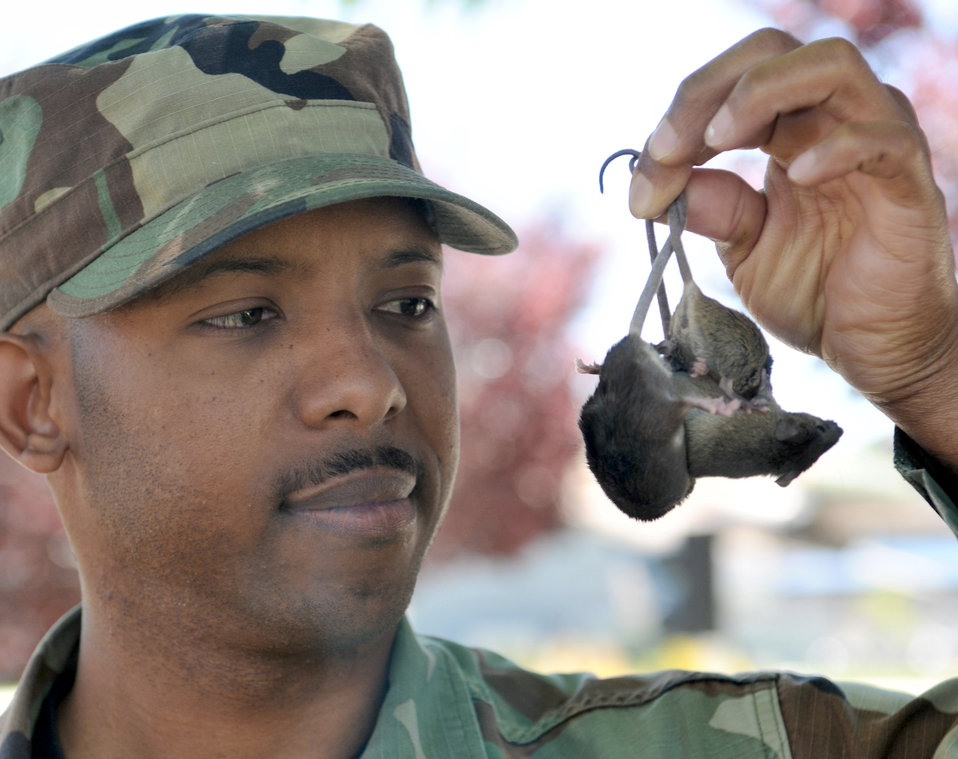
Air Guard exterminator handles pests

Staff Sgt. Damien Falconer is the lone pest management specialist in the Nevada Air National Guard. It is his job to eliminate all of the creepy-crawly nuisances on his base in Reno, Nev. The mice were used for illustrative purposes and were safely returned to a pet store.